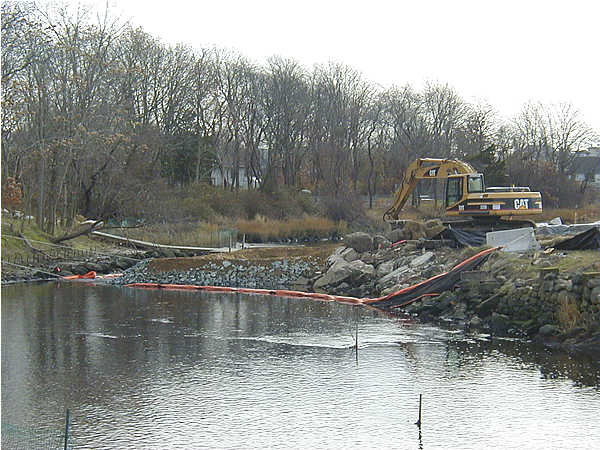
February 2003, Construction of the northern dam